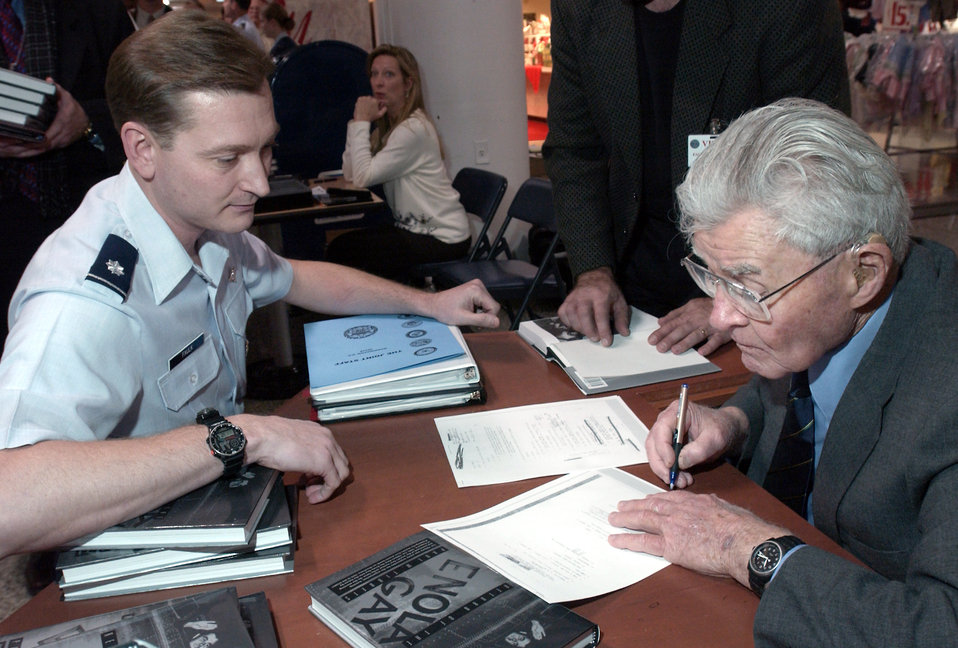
Retired pilot remembers

1940's -- WASHINGTON -- Retired Brig. Gen. Paul W. Tibbets (right) signs copies of his original orders for Lt. Col. Robert Faulk of the Joint Staff. The orders sent Tibbets and his crew of his B-29 Superfortress, known as the Enola Gay, into the sky over Japan to drop the first atomic bomb used as a weapon during World War II. Tibbetts was visiting the Pentagon to autograph copies of his book